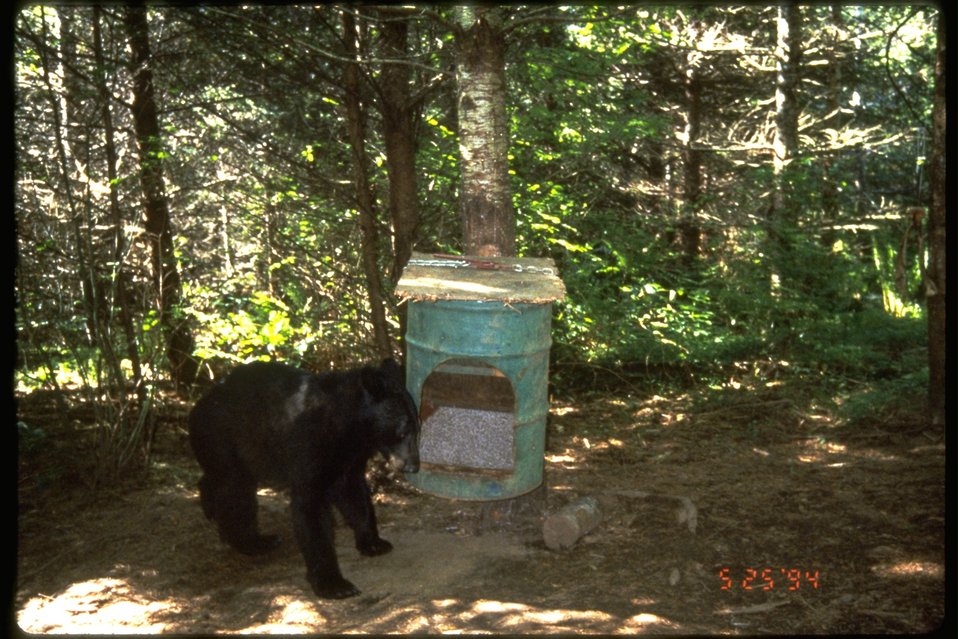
A black bear feeding station.